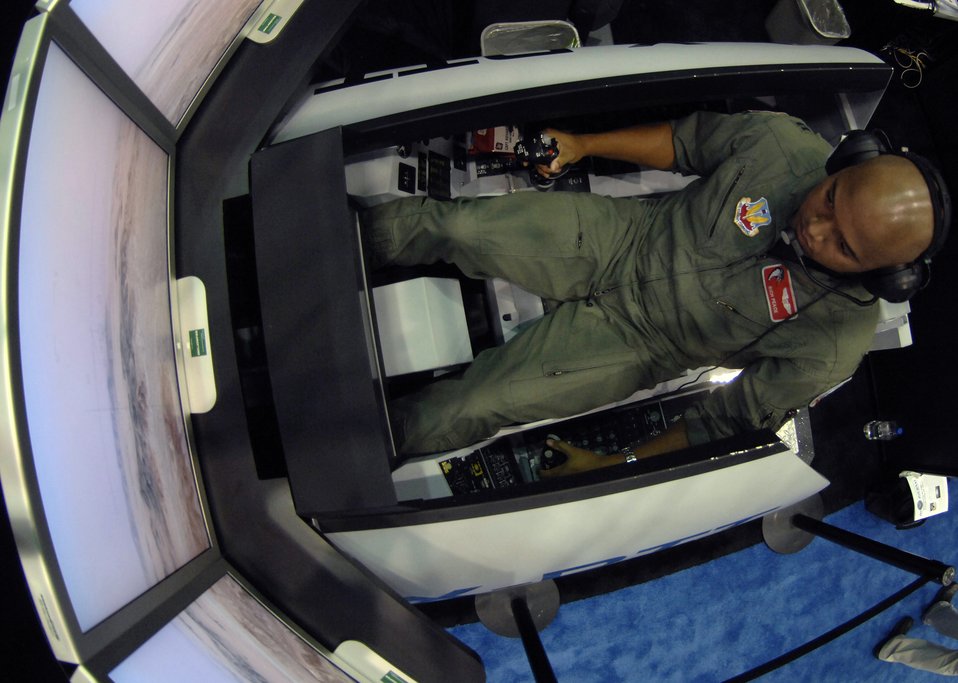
Conference makes virtual training a reality

Capt. Rich Peace navigates a mission in the X-DTT Experimental Deployable Tactical Trainer while receiving instructions from a joint terminal attack controller Nov. 28 during the Interservice/Industry Training, Simulation and Education Conference in Orlando, Fla. Captain Peace is an F-16 Fighting Falcon pilot with the 100th Fighter Squadron from Alabama.